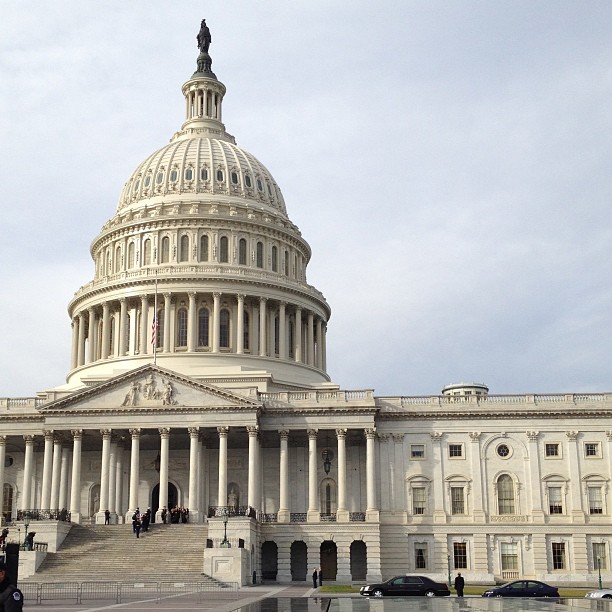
Honor guard carries Senator #Inouye into Capitol.